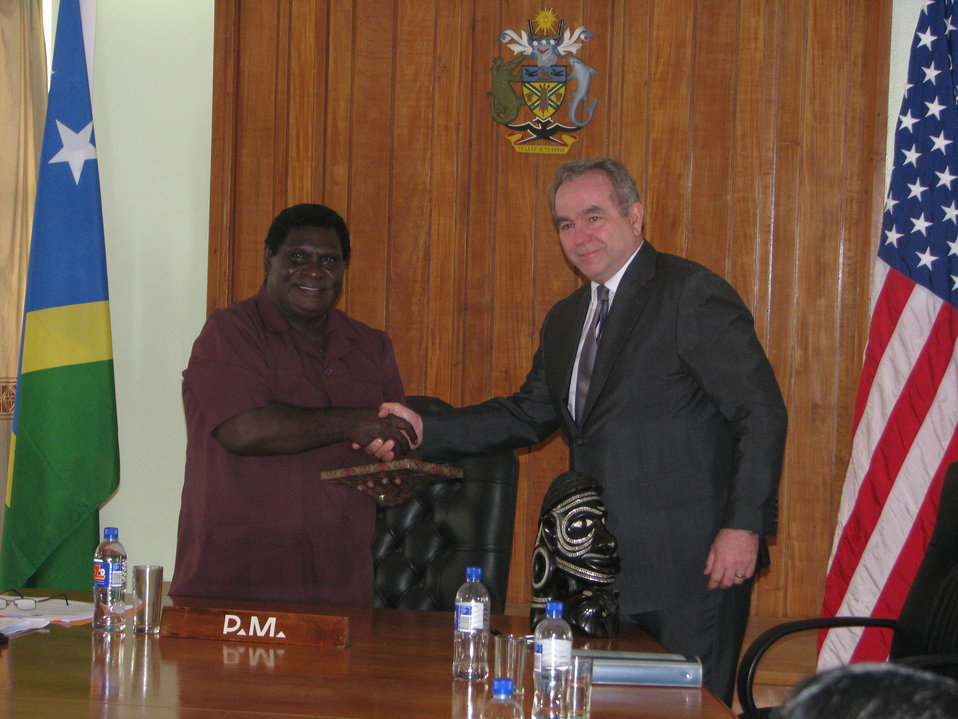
Assistant Secretary Campbell Presents a Memento to Solomon Islands Prime Minister Philip

Assistant Secretary of State for East Asian and Pacific Affairs Kurt Campbell, right, presents a memento to Solomon Islands Prime Minister Danny Philip during his visit to Honiara, Solomon Islands, on June 29, 2011. Assistant Secretary Campbell is leading a U.S. delegation on a trip throughout the South Pacific to engage in discussions to enhance bilateral political, economic, and security relations in the region.